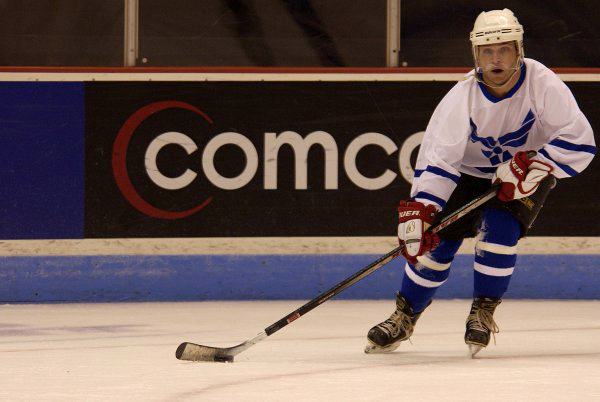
Hockey time

CHARLESTON, S.C. -- Chris Gulotta makes a perfect pass which led to a goal for the Air Force hockey team from nearby Charleston Air Force Base. The Airmen defeated the Navy team 6-5.